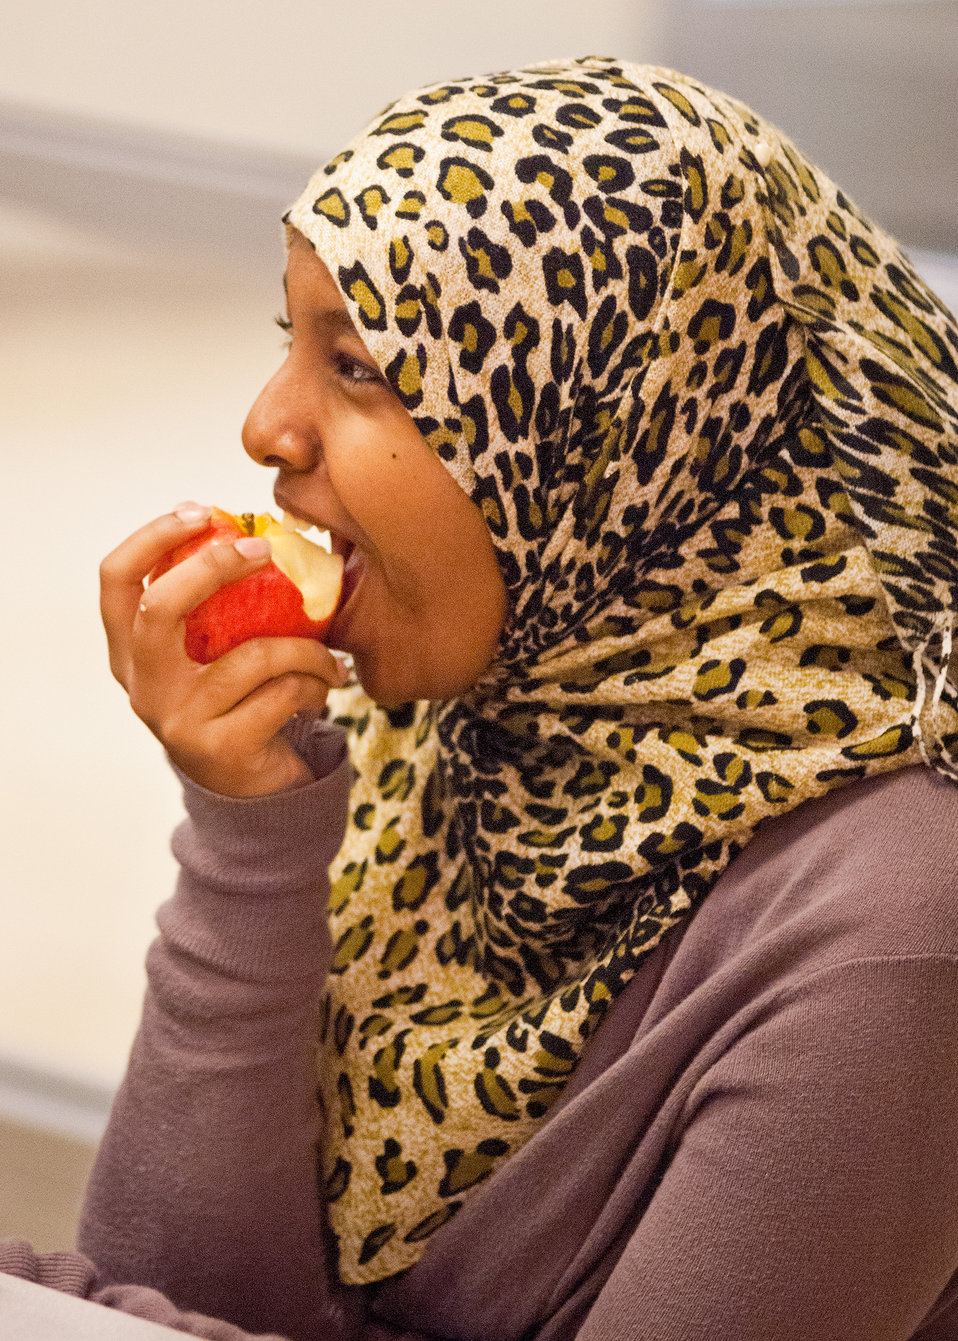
Hanan Seid a student at Washington-Lee High School in Arlington, Virginia enjoys an apple during lunch on Wednesday, October 19, 2011. Fresh fruits and vegetables are available to students through the National School Lunch Program. The National School Lunch Program is a federally assisted meal program administered by the United States Department of Agriculture, Food and Nutrition Service operating in public, nonprofit private schools and residential child care institutions. It provides nutritionally balanced, low-cost or free lunches to children each school day.